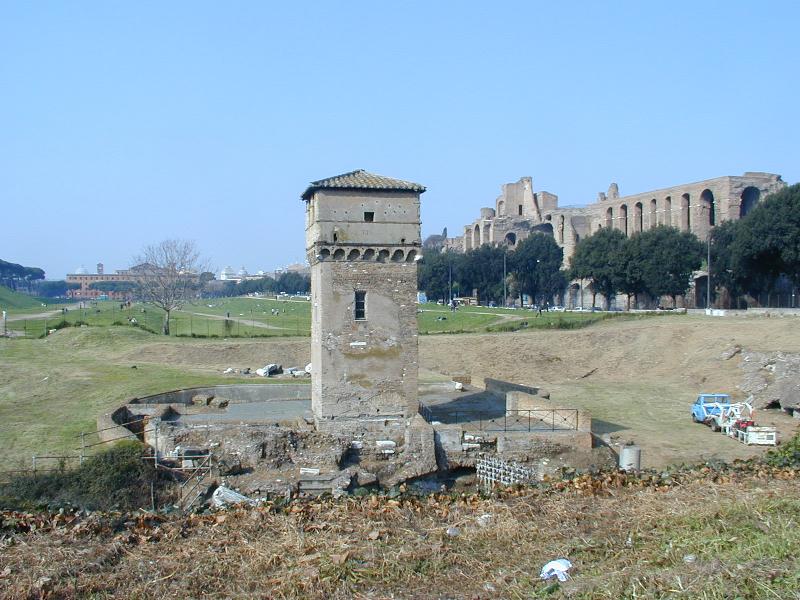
010218 Circo Massimo Torre